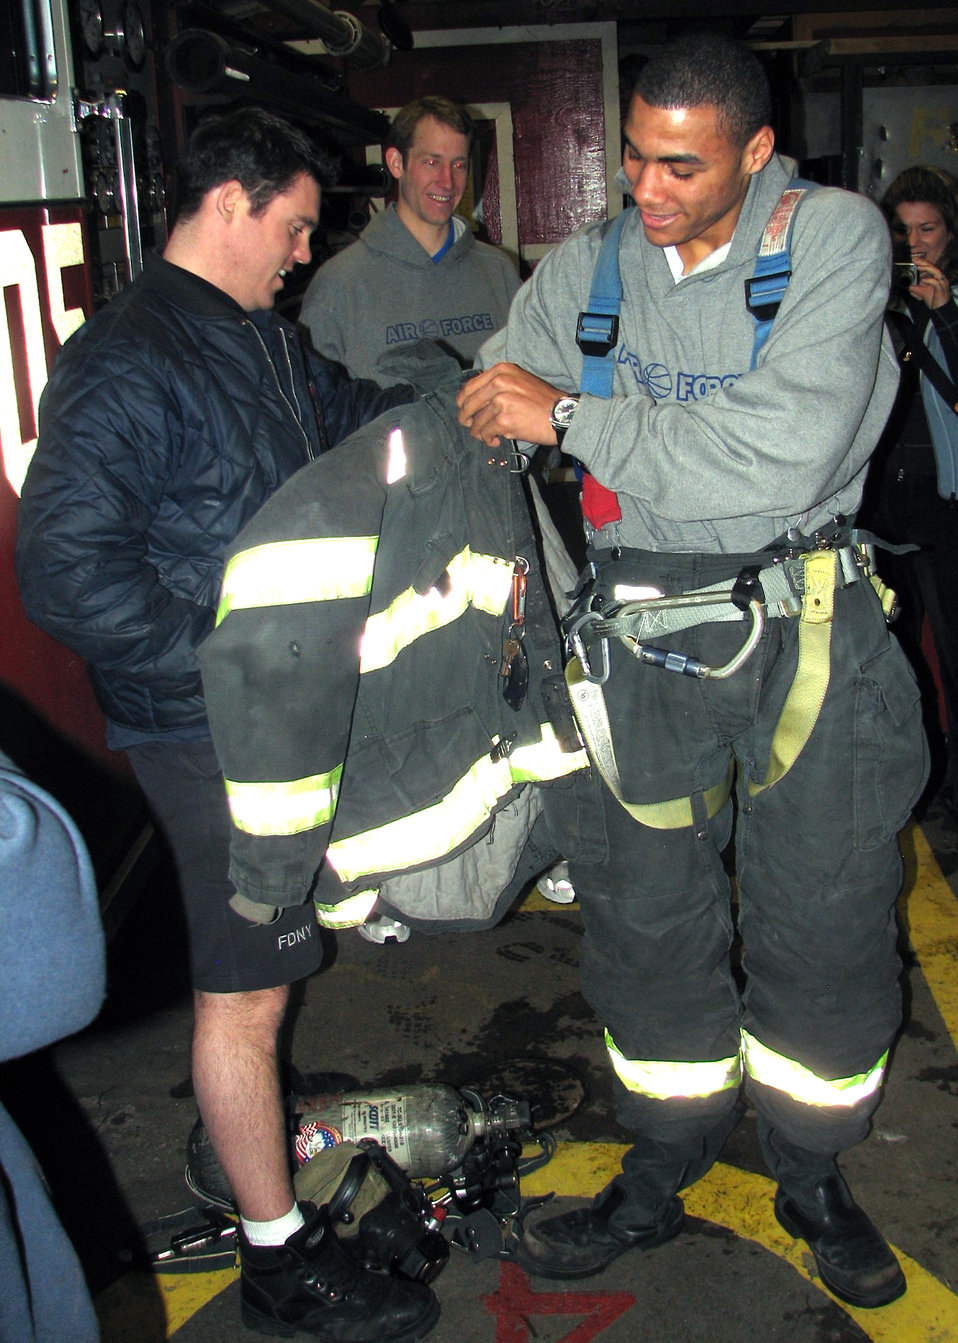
Academy Falcons tour New York

Cadet 1st Class Matt McCraw puts on a fireman's coat March 25 during a tour of the Engine 54 fire station in New York City. The senior is a member of the U.S. Air Force Academy men's basketball team, and is playing in the National Invitation Tournament semifinals March 27 against the Clemson Tigers in Madison Square Garden.